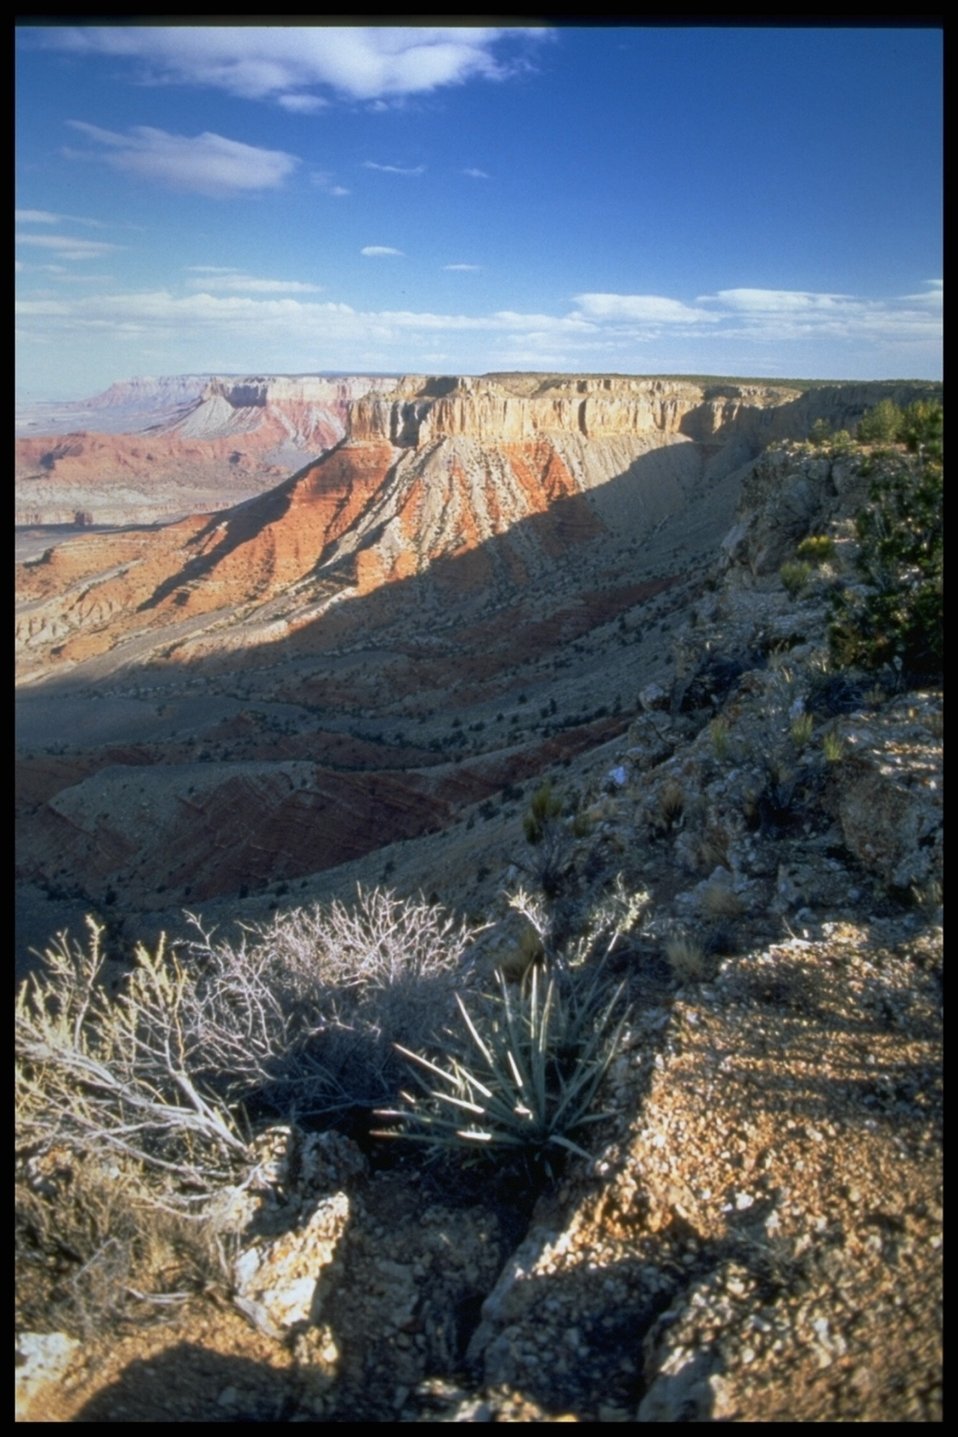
Canyon with little vegetation.